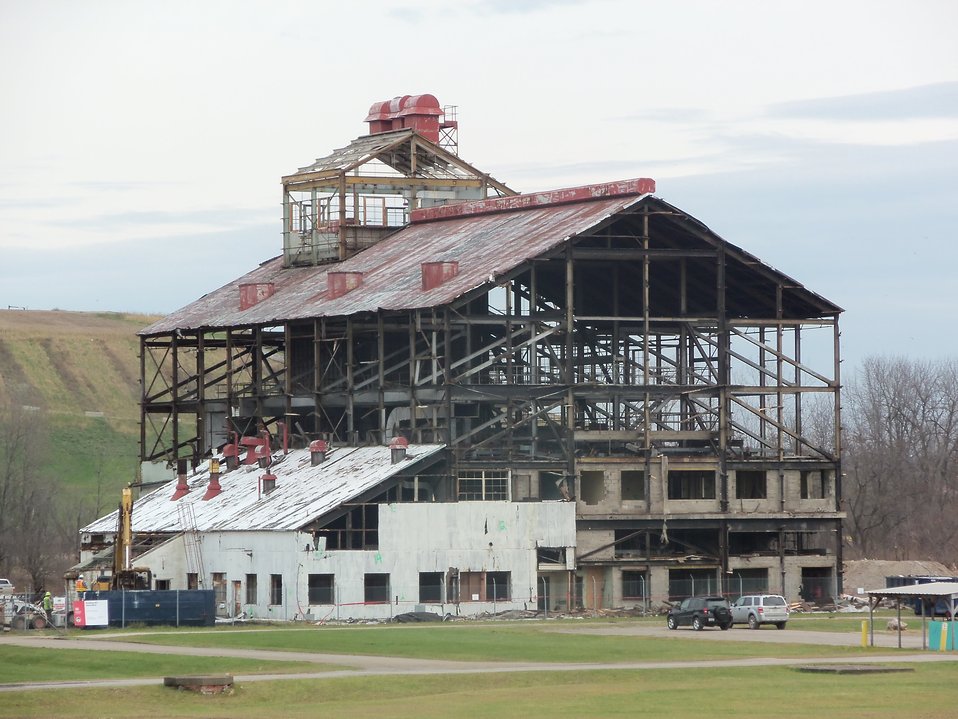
BLDG 401 DECONSTRUCTION OF SHELL

Activities from the Niagara Falls Storage Site, which is associated with the former Lake Ontario Ordnance Works. Formerly Utilized Sites Remedial Action Program (FUSRAP), a program initiated in 1974 to identify, investigate and clean up or control sites that were part of the Nation's early atomic energy and weapons program. Activities at the sites that are eligible for FUSRAP were conducted by Manhattan Engineer District (MED) or the Atomic Energy Commission (AEC), both predecessors of the Department of Energy (DOE). The U.S. Army Corps of Engineers was assigned management of FUSRAP by Congress in 1997.